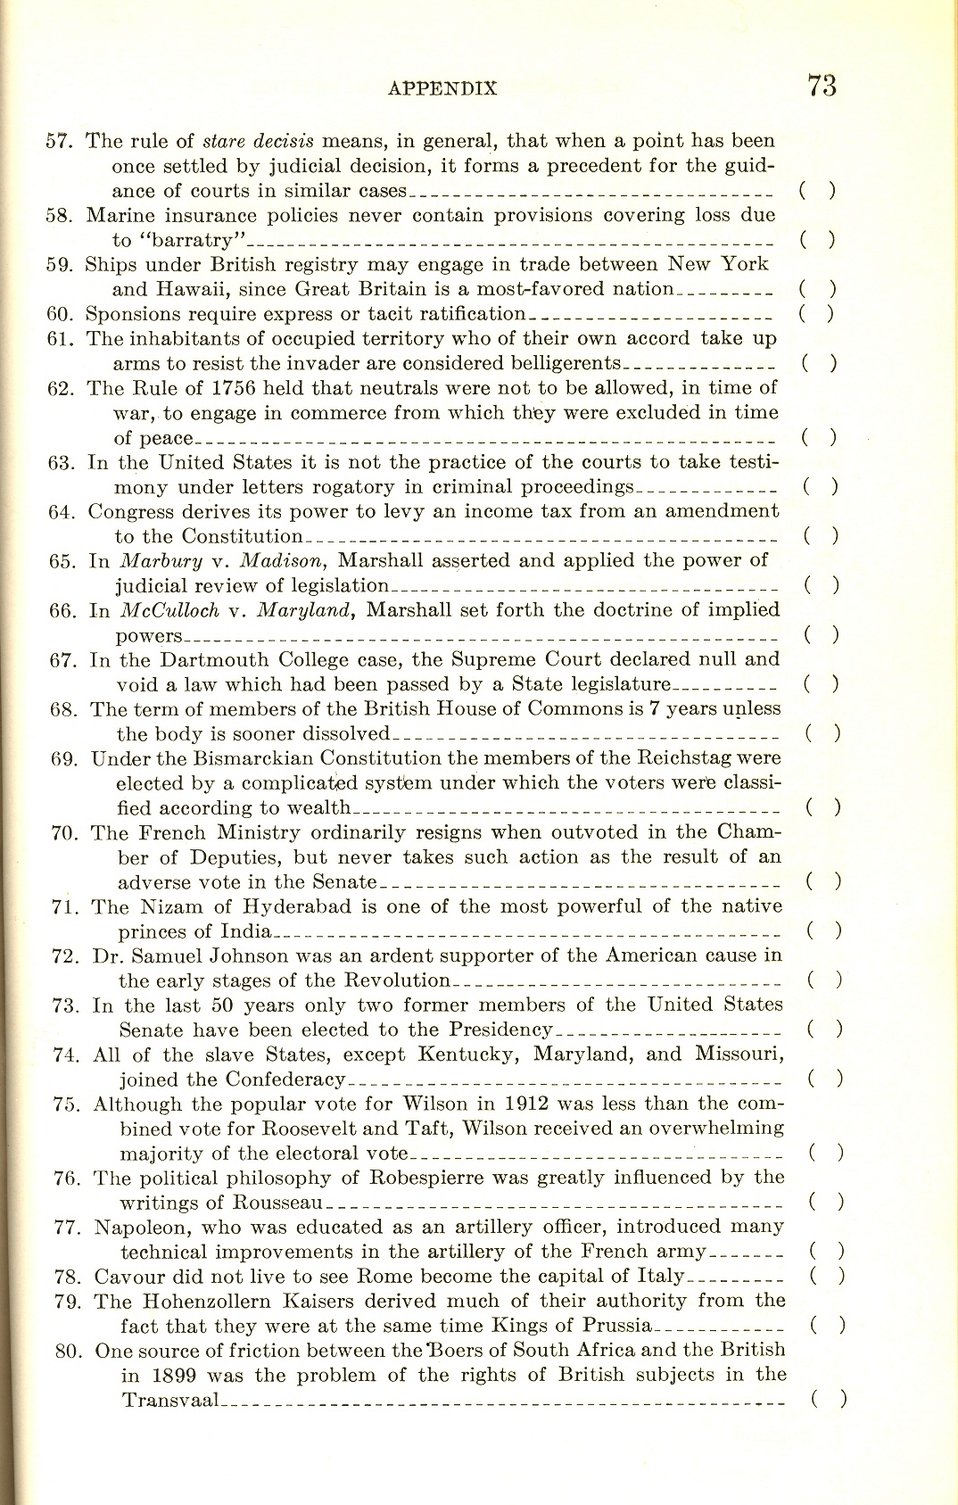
Test Your Knowledge With Sample Questions From a 1940 U.S. Foreign Service Exam Booklet

This photograph shows a page from a 1940 booklet, 'The American Foreign Service General Information for Applicants and Sample Entrance Examination Questions.' With the passage of the Rogers Act establishing the current merit-based, professional Foreign Service, the modern Foreign Service was created on May 24, 1924. On May 22, 2014, U.S. Secretary of State John Kerry delivered remarks at an event celebrating the 90th anniversary of the U.S. Foreign Service.